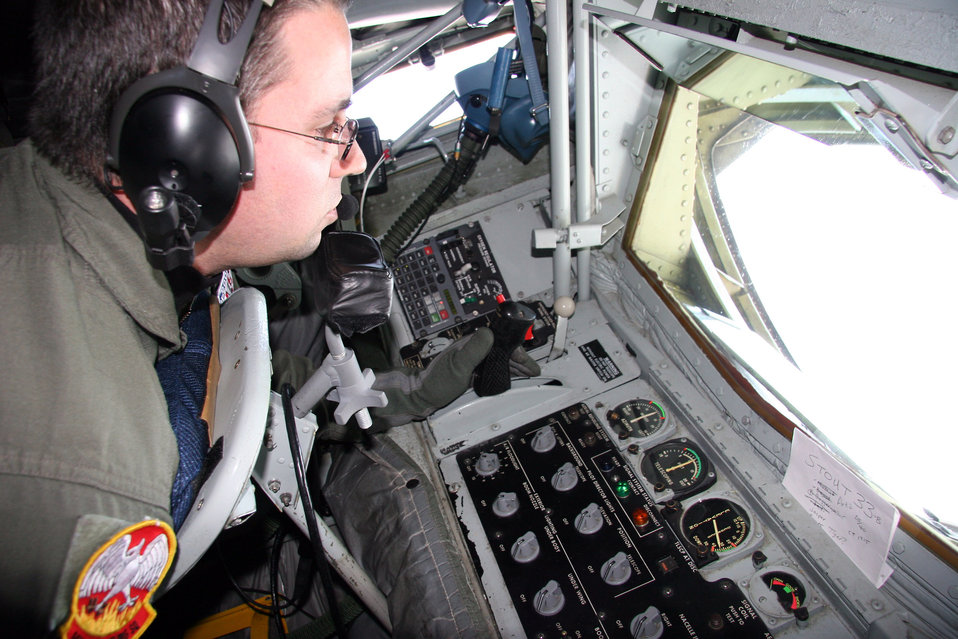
Making contact

OVER UTAH (AFPN) -- Master Sgt. Derek Stabell talks to an F-16 Fighting Falcon before it refuels. Sergeant Stabell is a boom operator with the 64th Air Refueling Squadron in Portland, Ore. The F-16 is with the 419th Fighter Wing at Hill Air Force Base, Utah.